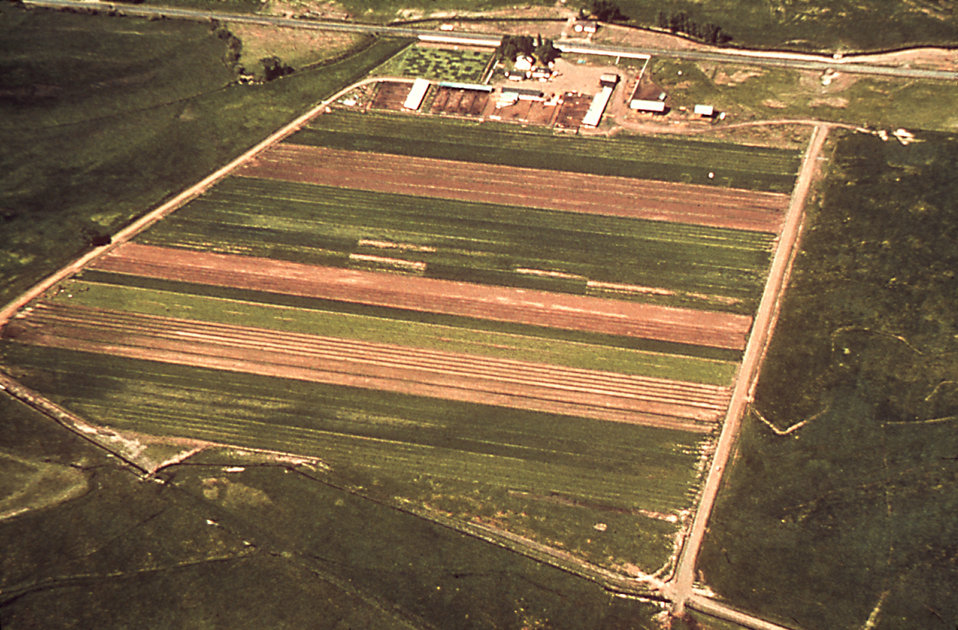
This aerial view of an irrigated farm depicts yet another environment that potentially could act as a mosquito breeding ground.